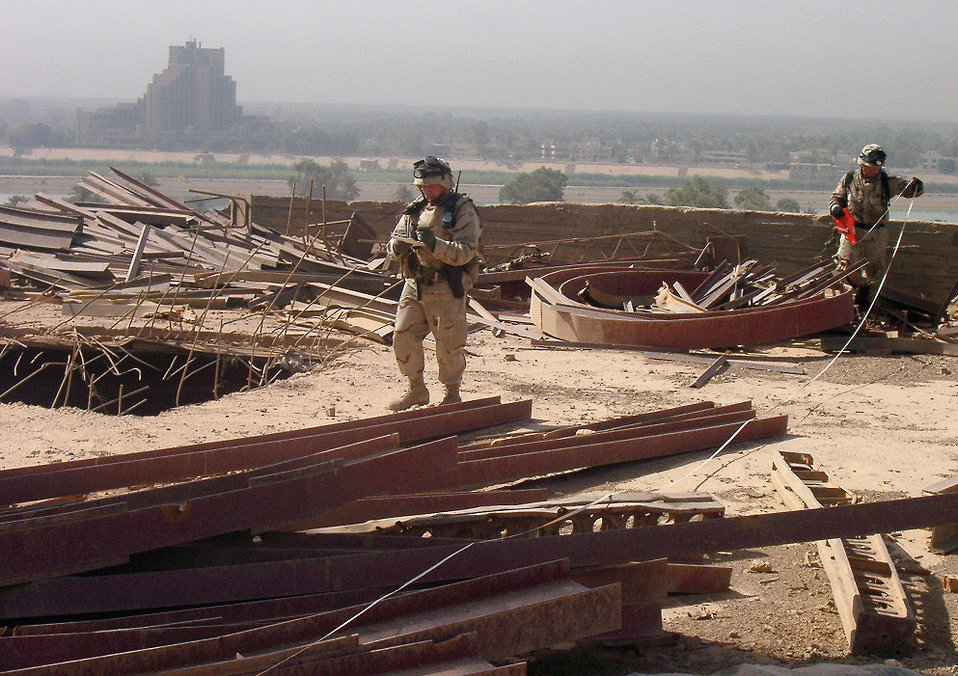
Shock and awe check

BAGHDAD, Iraq -- Maj. Craig Baker (left) and Staff Sgt. Zach Porter take measurements on the roof of the Ba'ath Party headquarters building, which was struck by coalition precision-guided munitions during Operation Iraqi Freedom. The airmen are among nearly 100 experts of the Combined Weapons Effectiveness Assessment Team. The team has visited more than 100 of a planned 500 sites to assess how well coalition weapons achieved their intended effects during Operation Iraqi Freedom. It will report its findings to U.S. Central Command this fall.